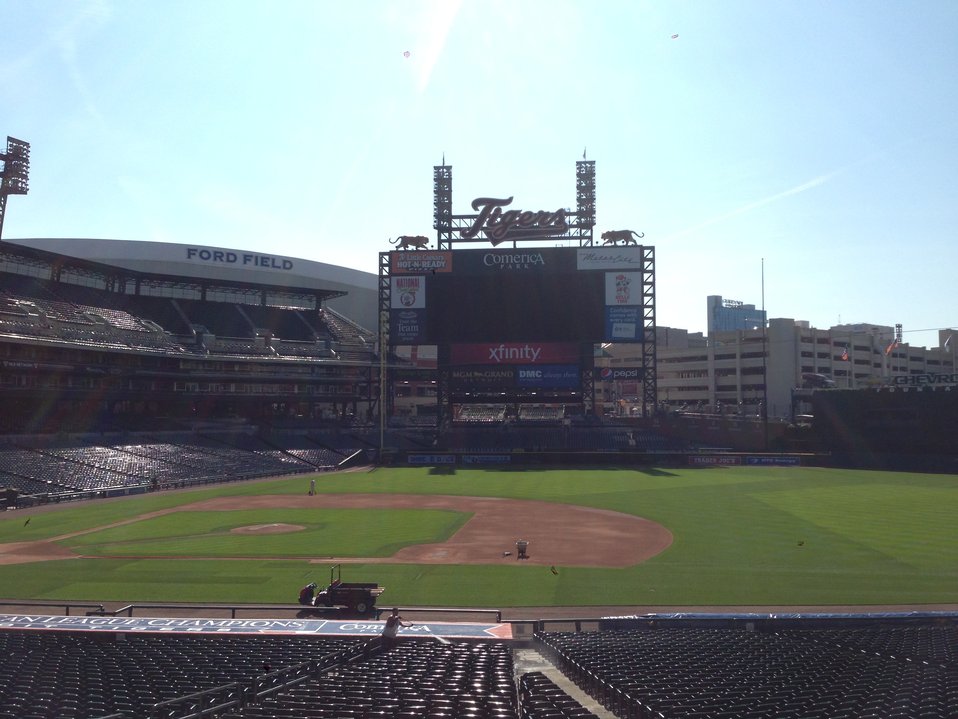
Tigers Stadium